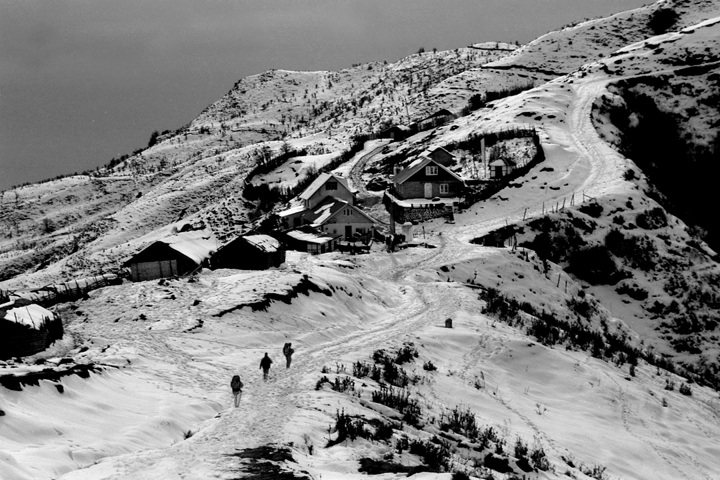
Uploaded by request of Sandipan Majumdar

Taken in Sandakphoo, West Bengal, India

This photo was taken in the winter of 2005. Sandakphoo (12,000 ft) is a very popular treke route for Sunrise.